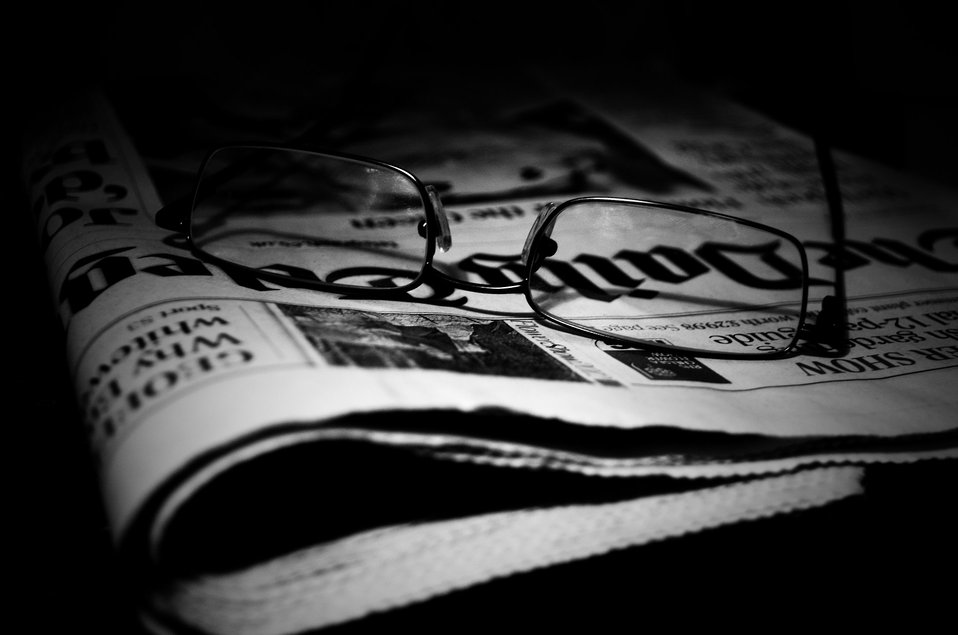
Newspapers and glasses.